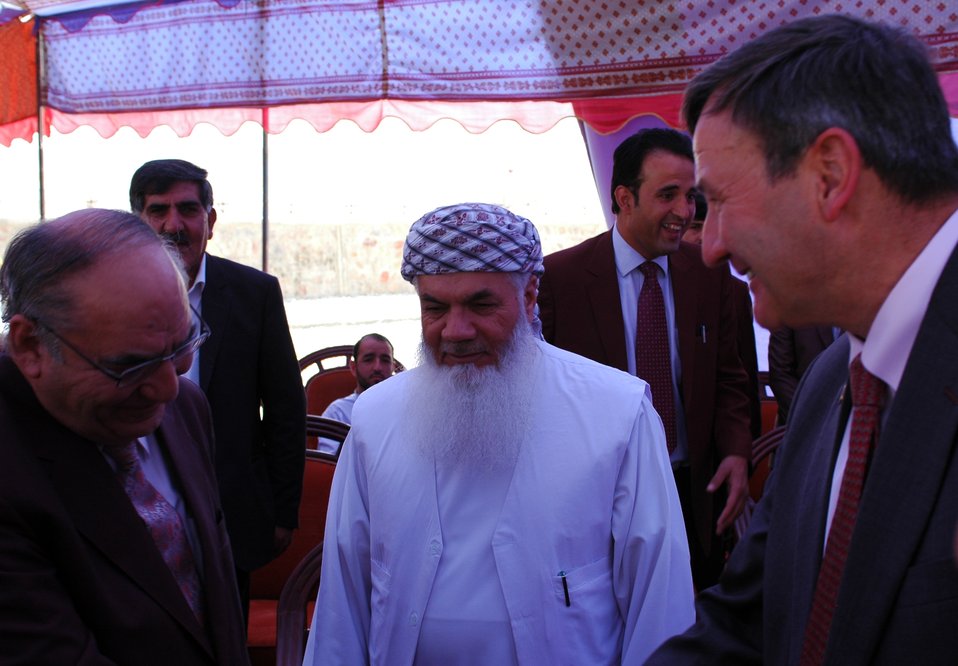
105 MW Tarakhil Power Plant Handover